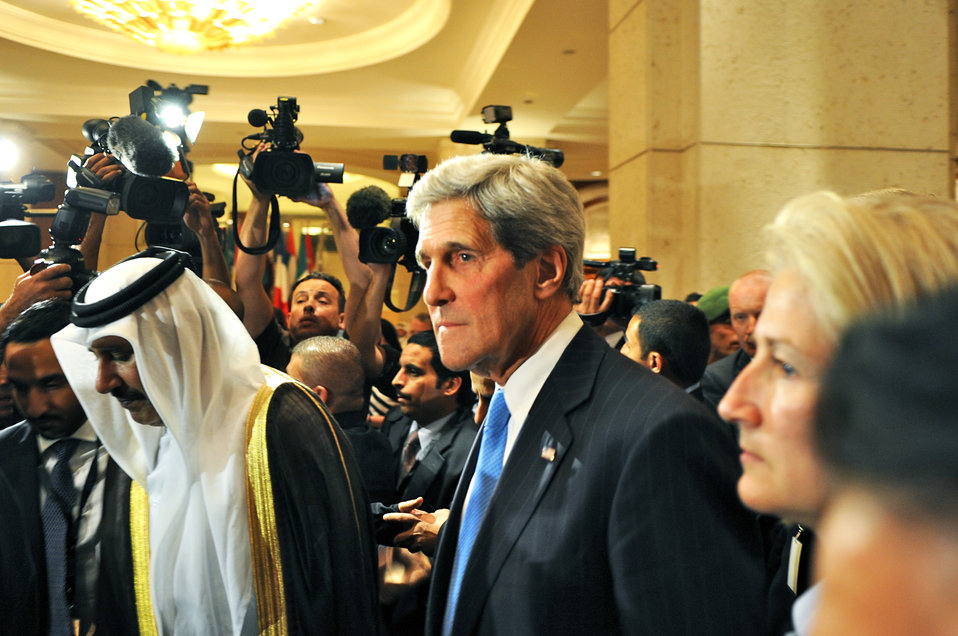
Secretary Kerry Walks Between Meetings at the London Eleven Plenary

U.S. Secretary of State John Kerry walks between meetings during the London Eleven Plenary in Amman, Jordan, on May 22, 2013.